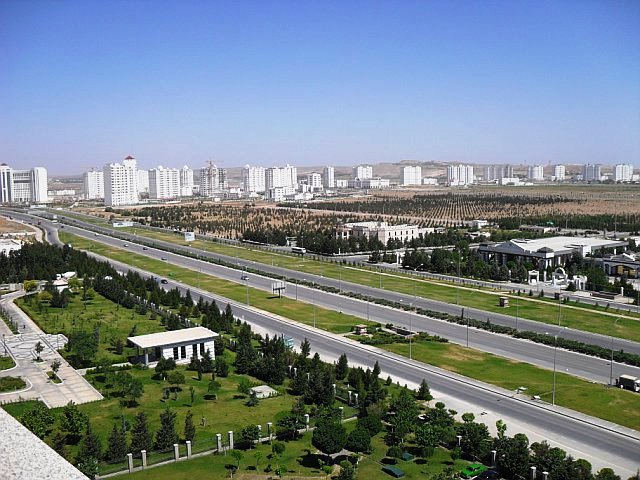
SCA Special Assistant Morgan Takes a Photo of Ashgabat, Turkmenistan

Rebecca S. Morgan, Special Assistant for the Bureau of South and Central Asian Affairs, takes a photo of Ashgabat, Turkmenistan, on June 14-16, 2010.